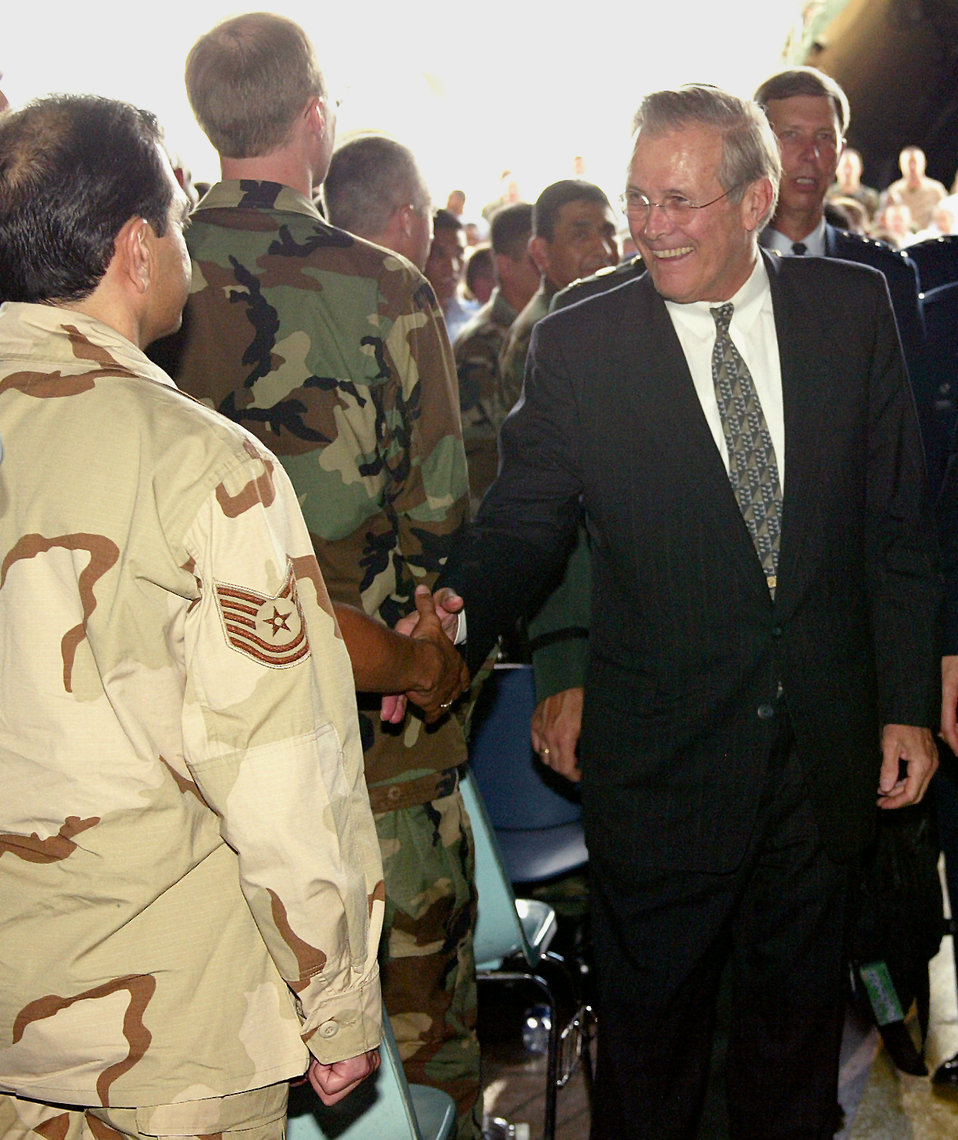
Rumsfeld visits

LACKLAND AIR FORCE BASE, Texas -- Secretary of Defense Donald Rumsfeld shakes hands with members of the audience after a town hall meeting here Aug. 25. He spoke to about 3,500 servicemembers from installations in the San Antonio area.